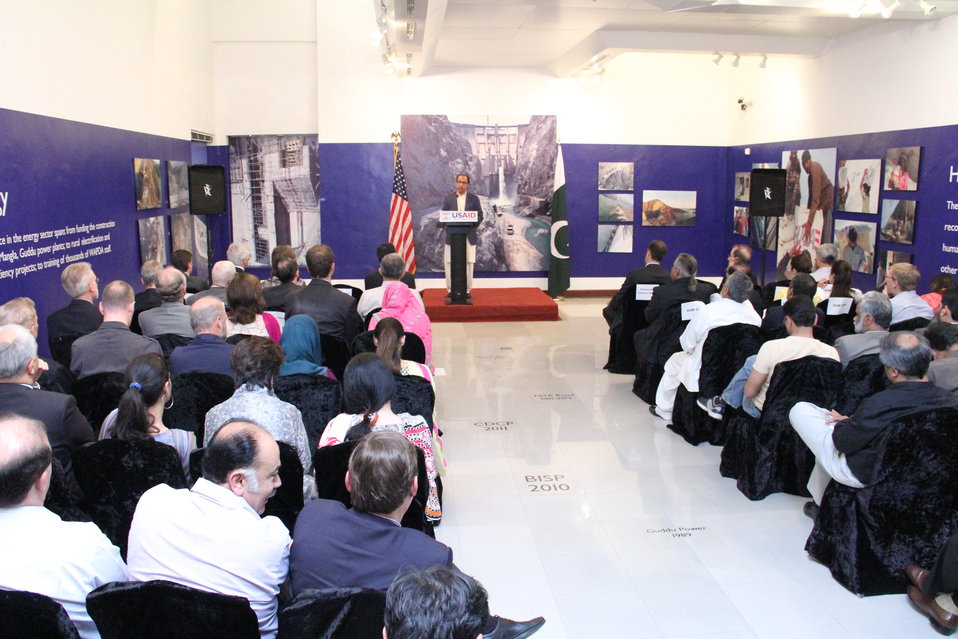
Photo Exhibition Celebrate US-PAK Cooperation at PNCA, Islamabad on April 13, 2012

Dr. Hafeez Sheikh address the Media, Participants & US officials on photo exhibition .